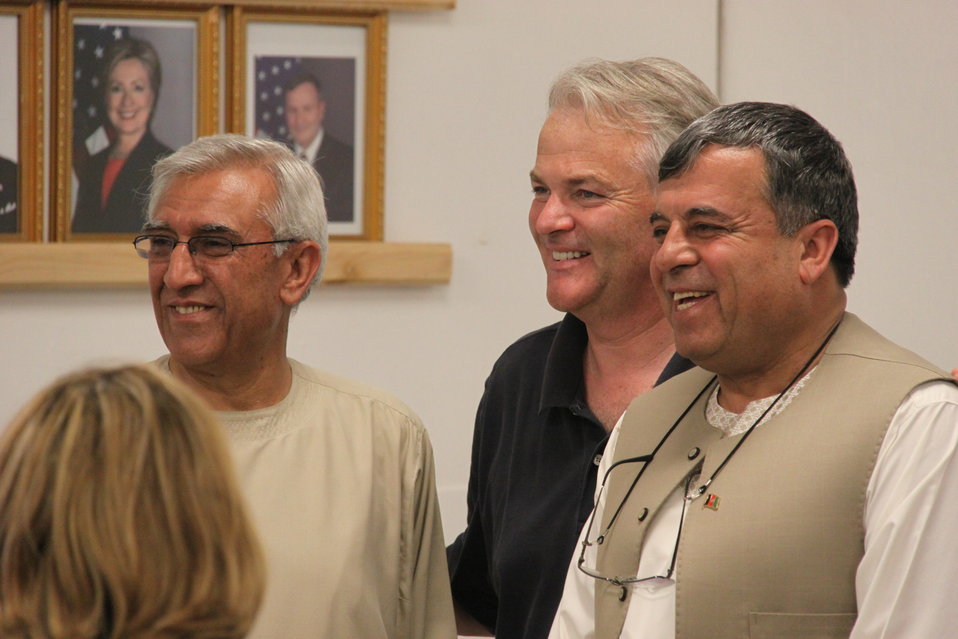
Meeting with Local Leaders in Kandahar